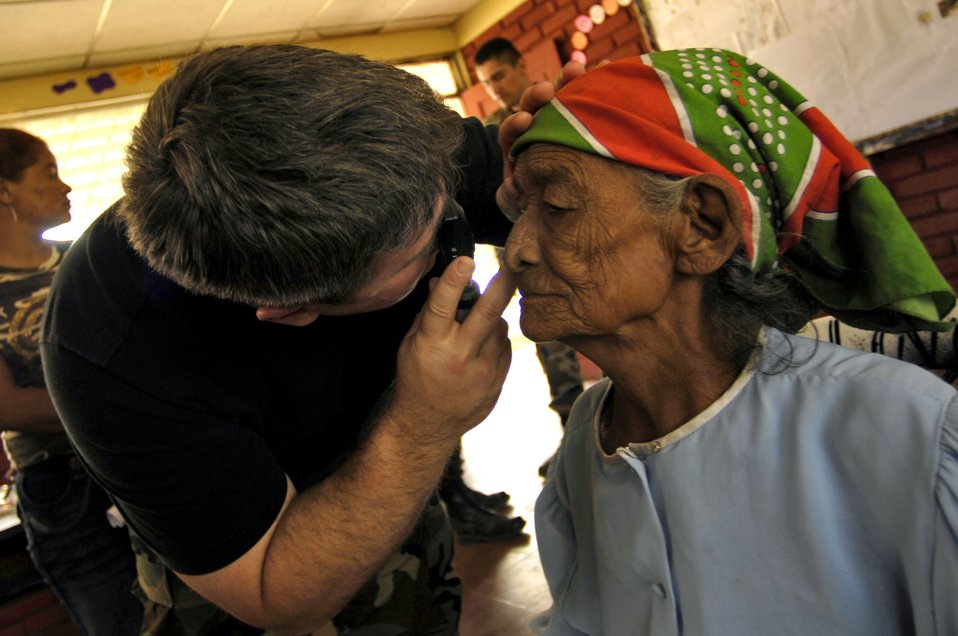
Sights on Nicaragua

Maj. Michael Osterhoudt, deployed with 820th Expeditionary RED HORSE Squadron, assesses a woman's eyesight Feb. 26 while participating in Medical Readiness Training Exercises in Santa Teresa, during New Horizons-Nicaragua 2007. Major Osterhoudt is from Beale Air Force, Calif.